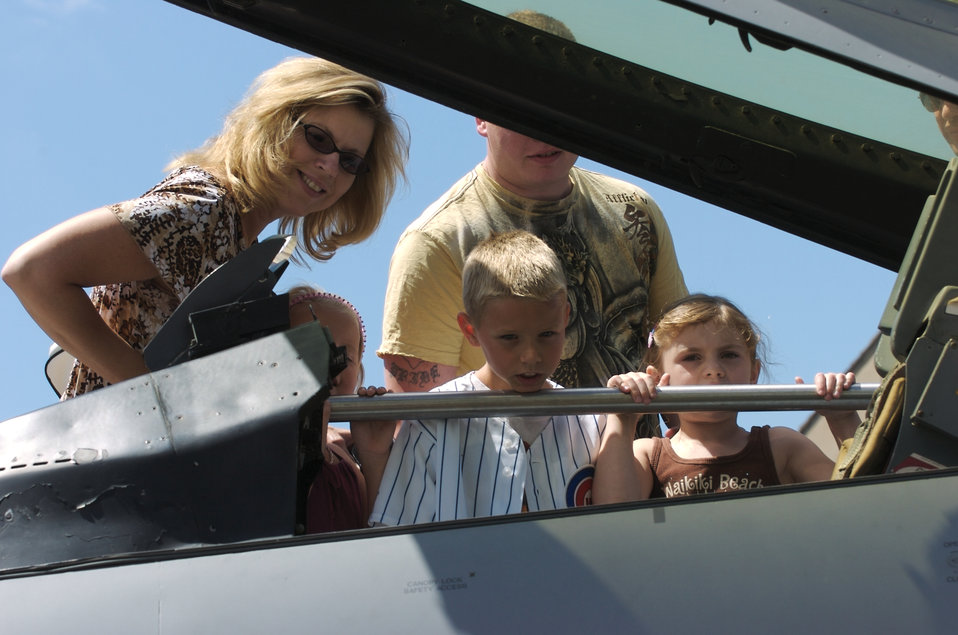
Air Force Week in the Heartland reaches out to Omaha zoo

Becky (left), Jenna, Jack, Kyle (yellow shirt) and Kyrah Krenke-Dailey get an up-close view of an F-16 Fighting Falcon during Air Force Week in the Heartland Aug. 12 at the Henry Doorly Zoo in Omaha, Neb. Zoo visitors also had the chance to see the Do Something Amazing display, a motion simulator and video simulators during Air Force Week in the Heartland.